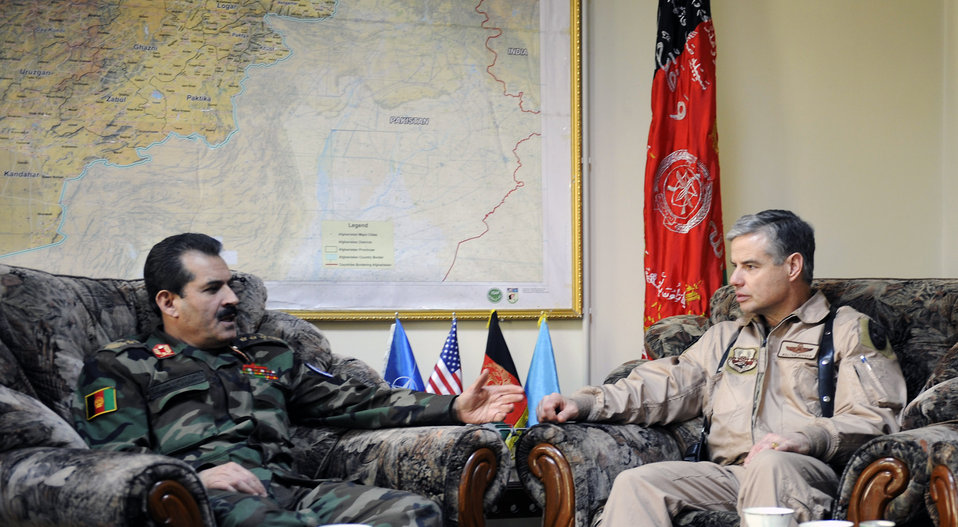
Constructing an air corps from the ground up

Brig. Gen. Walter Givhan and Maj. Gen. Mohammed Darwan, Afghan National Army Air Corps commander, discuss airpower issues in Kabul, Afghanistan, Jan. 24. Airmen from the U.S. Air Force and the Afghan National Army Air Corps are working side-by-side to provide an airpower capability to the nation of Afghanistan. General Givhan is the 438th Air Expeditionary Wing and Combined Air Power Transition Force commander.